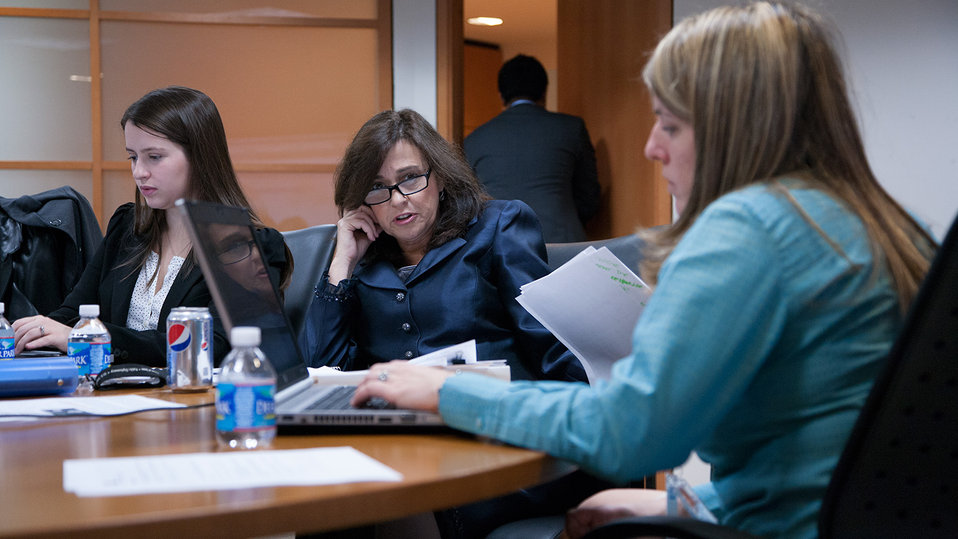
Under Secretary Sonenshine Participates in a Global Twitter QandA

Under Secretary of State for Public Diplomacy and Public Affairs Tara Sonenshine, @TSonenshine, participates in a Global Twitter Q and A on December 5, 2012.